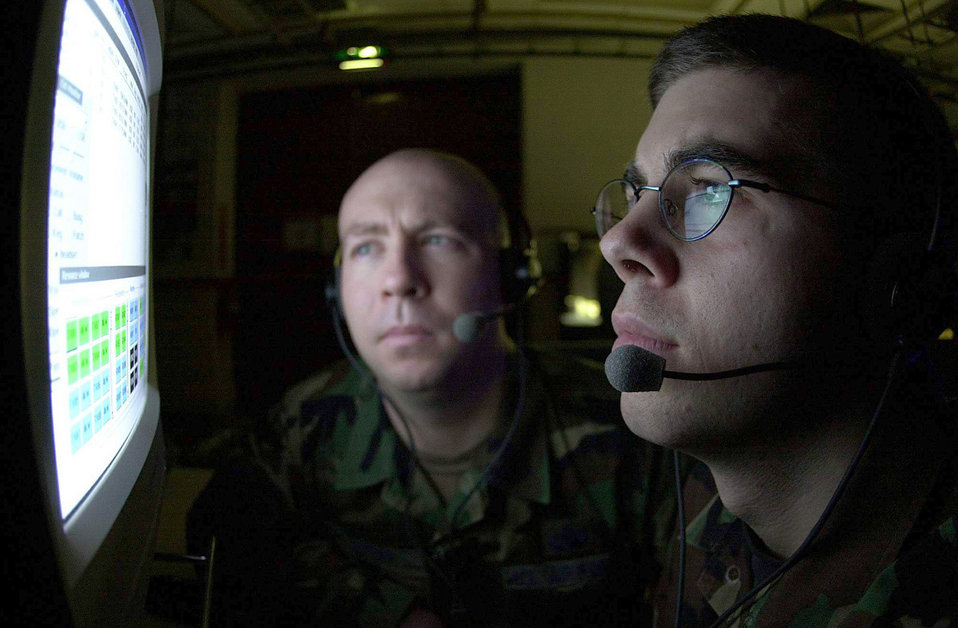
Croughton makes final broadcast

Tech. Sgt. Brian Nutter (left) and Senior Airman Josh Langworthy monitor the System Capable of Planned Expansion Command console at Royal Air Force Croughton, England. The new system allows trans-Atlantic aircrews to direct-dial phone numbers on the best frequency available.